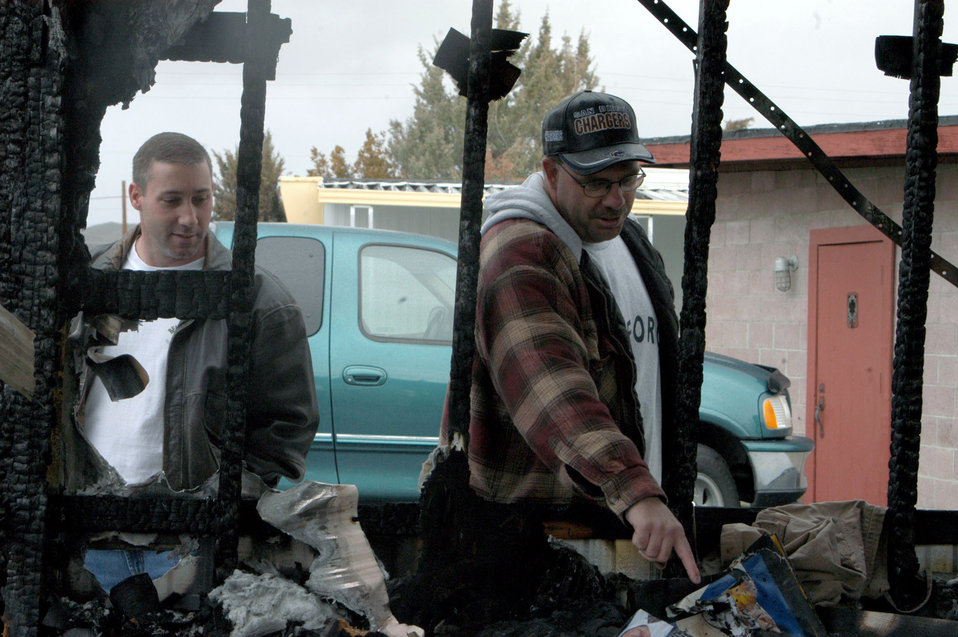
Edwards Airmen save man from inferno

EDWARDS AIR FORCE BASE, Calif. -- Tech. Sgts. Jerry Rocovits (left) and James Voight survey the damage to burned mobile home Jan. 8 at a trailer park near here. The Airmen pulled an occupant to safety. Sergeant Rocovits is a 412th Flight Test Squadron KC-135C Speckled Trout structural repair maintenance specialist, and Sergeant Voight is a 412th Aircraft Maintenance Squadron F-16 Fighting Falcon mechanic.